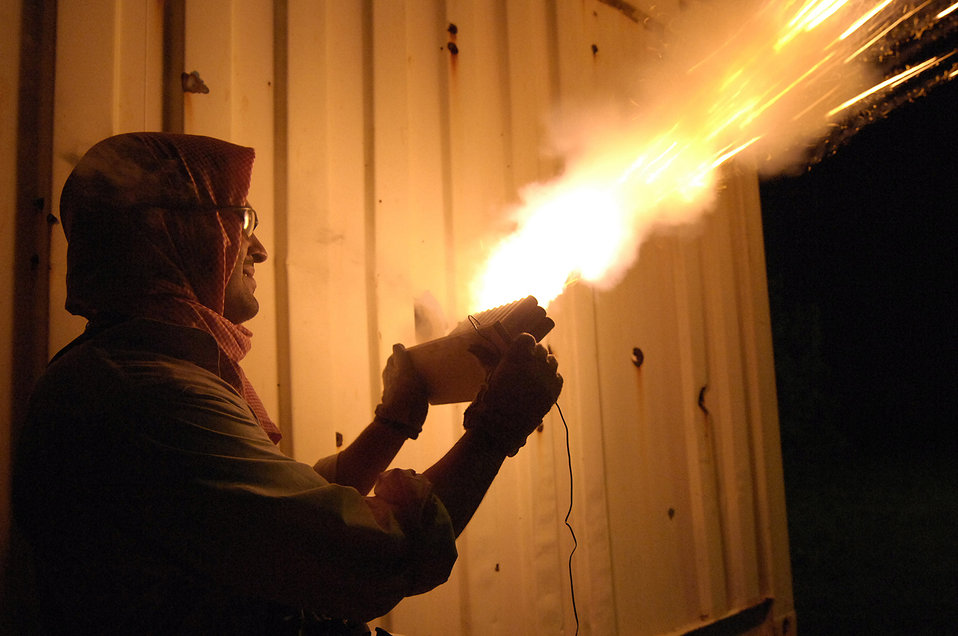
Atlantic Strike VII

A member of the opposing forces engages Soldiers, Airmen and Marines in simulated combat June 16 during Atlantic Strike VII at the Avon Park Air Ground training Complex, Avon Park, Fla. Atlantic Strike is a joint-forces training event involving joint terminal attack controllers from the Army, Air Force and Marines and is held semi-annually.